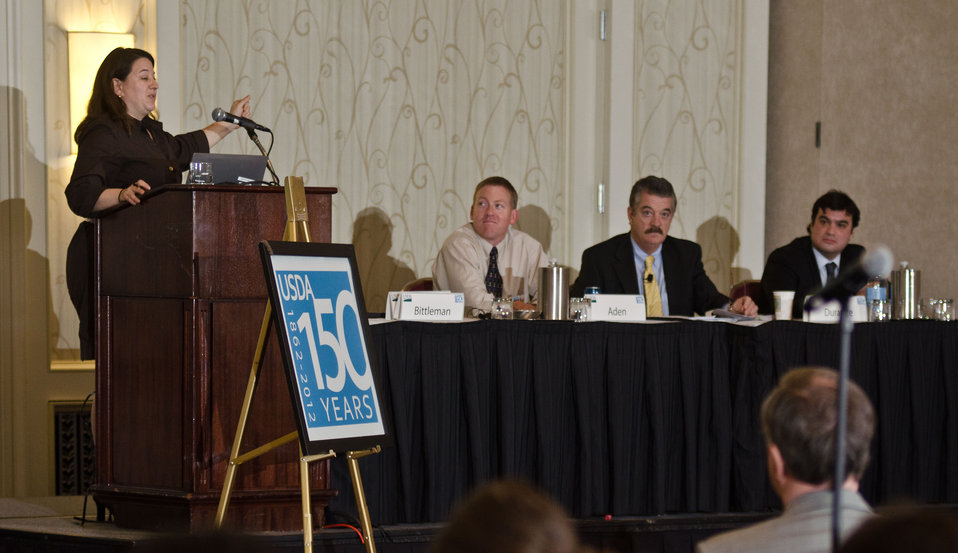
Agriculture Senior Advisor to the Secretary Sarah Bittleman (left), moderated the Renewable Energy session on “Moving Renewable Energy Forward,” at the 2012 Agricultural Outlook Forum, “Moving Agriculture Forward, Growing, Innovating and Celebrating 150 Years” held at the Crystal Gateway Marriott Hotel in Arlington, Virginia, on Thursday, February 23, 2012. This year’s forum coincides with the 150th anniversary of the Department of Agriculture addressing economics, marketing, research, food safety, nutrition, conservation, rural development, alternative energy, trade and many other agricultural issues.